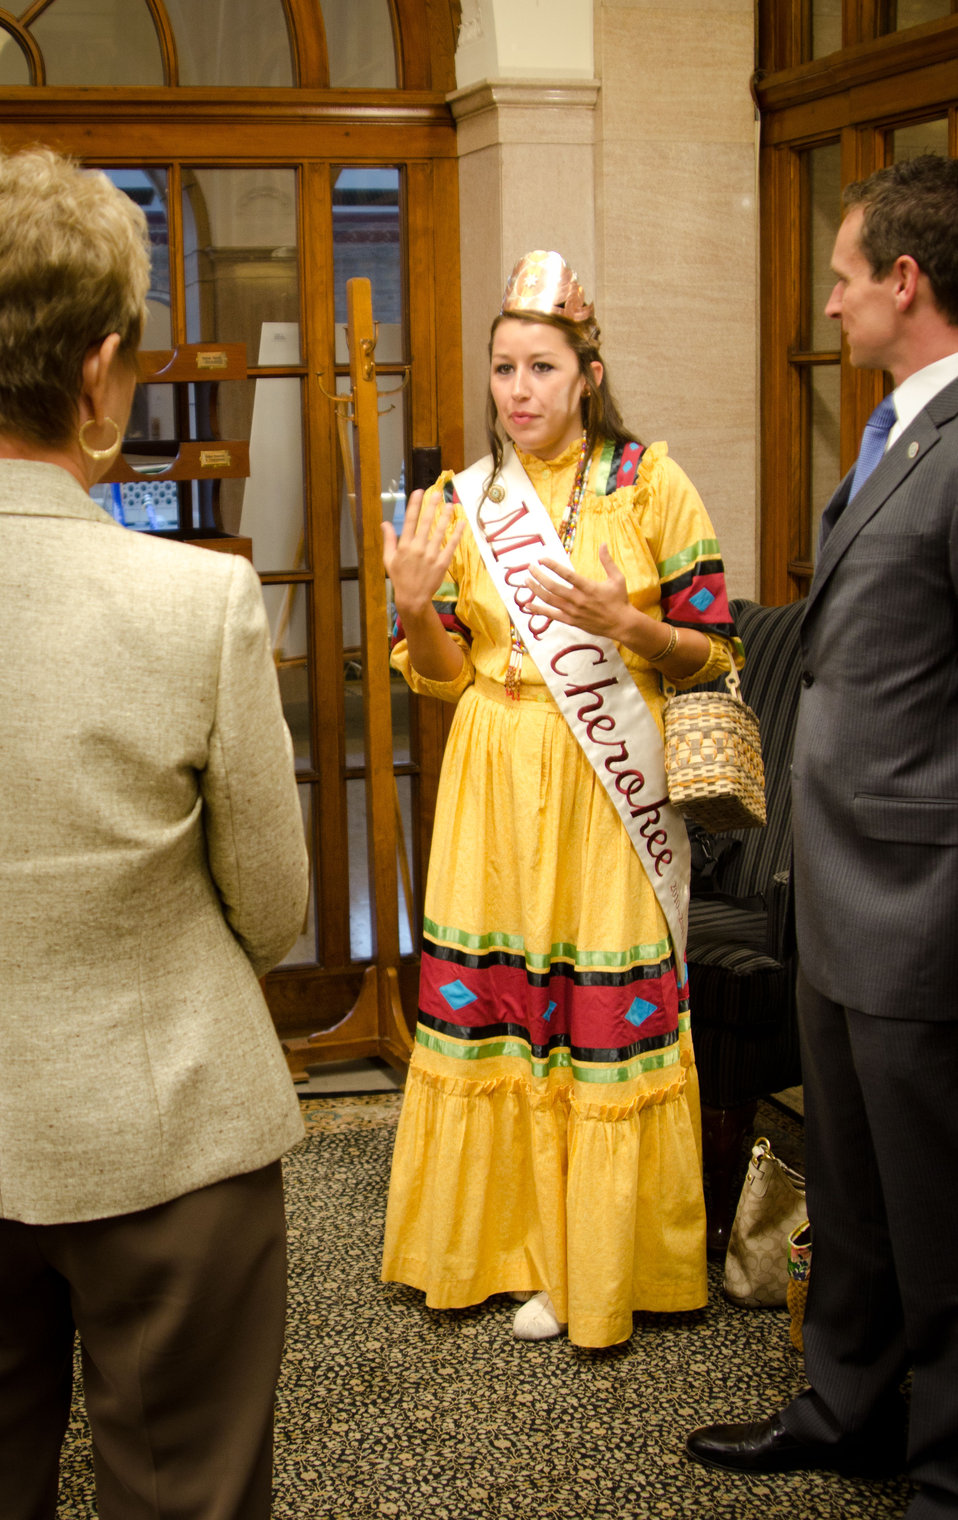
Miss Cherokee 2010-2011 Brooke Hudson and officers of the Cherokee nation met with U.S. Department of Agriculture staff members in Washington, DC, on Tuesday, August 9, 2011 USDA Photo by Lance Cheung.